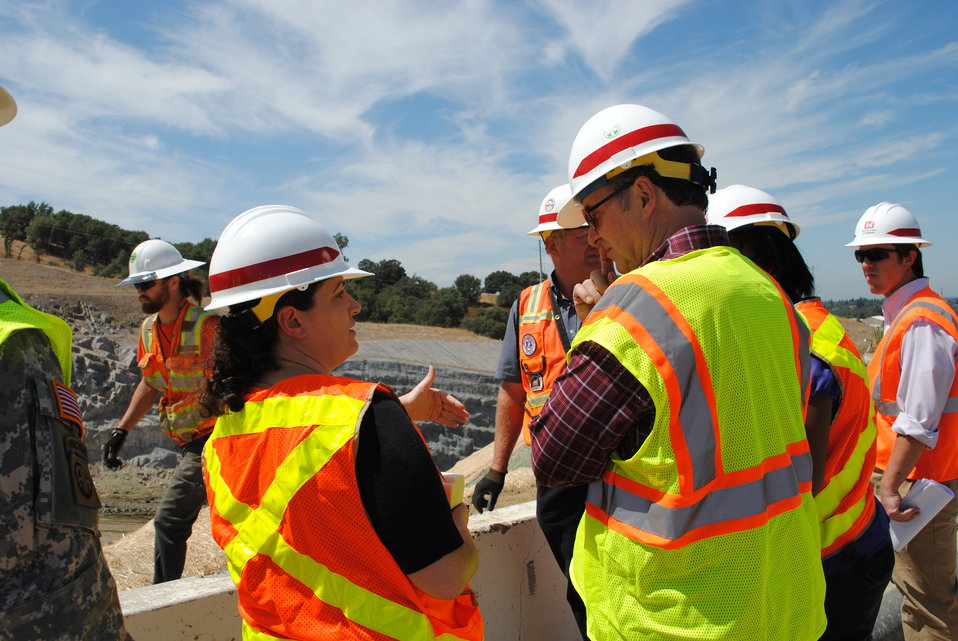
Congressman Dan Lungren gets updates from project manager Beth Salyers

U.S. Army Corps of Engineers Sacramento District project manager Beth Saylers explains how Folsom Dam's auxiliary spillway will compliment the functions of the main dam, allowing water to be released earlier and more safely from Folsom Lake during a high water event.